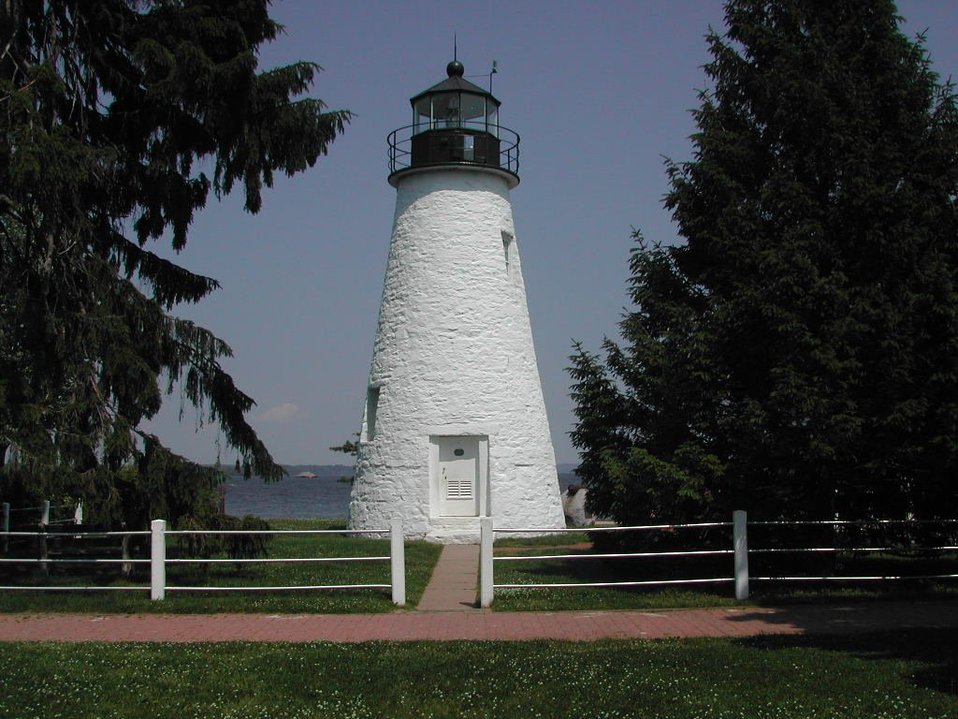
Concord Point Lighthouse